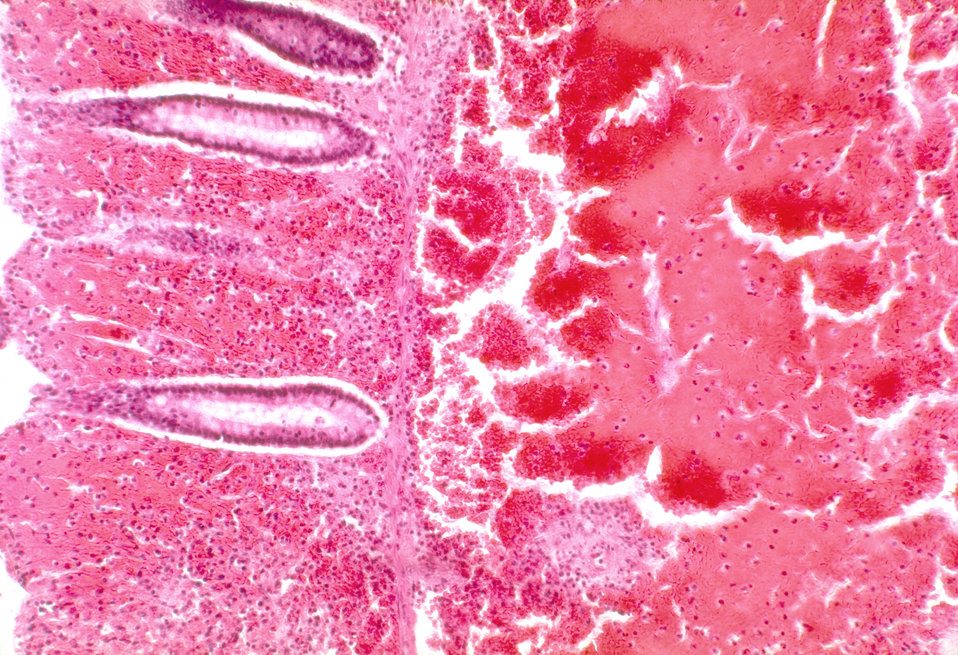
Histopathology of large intestine in fatal human anthrax.